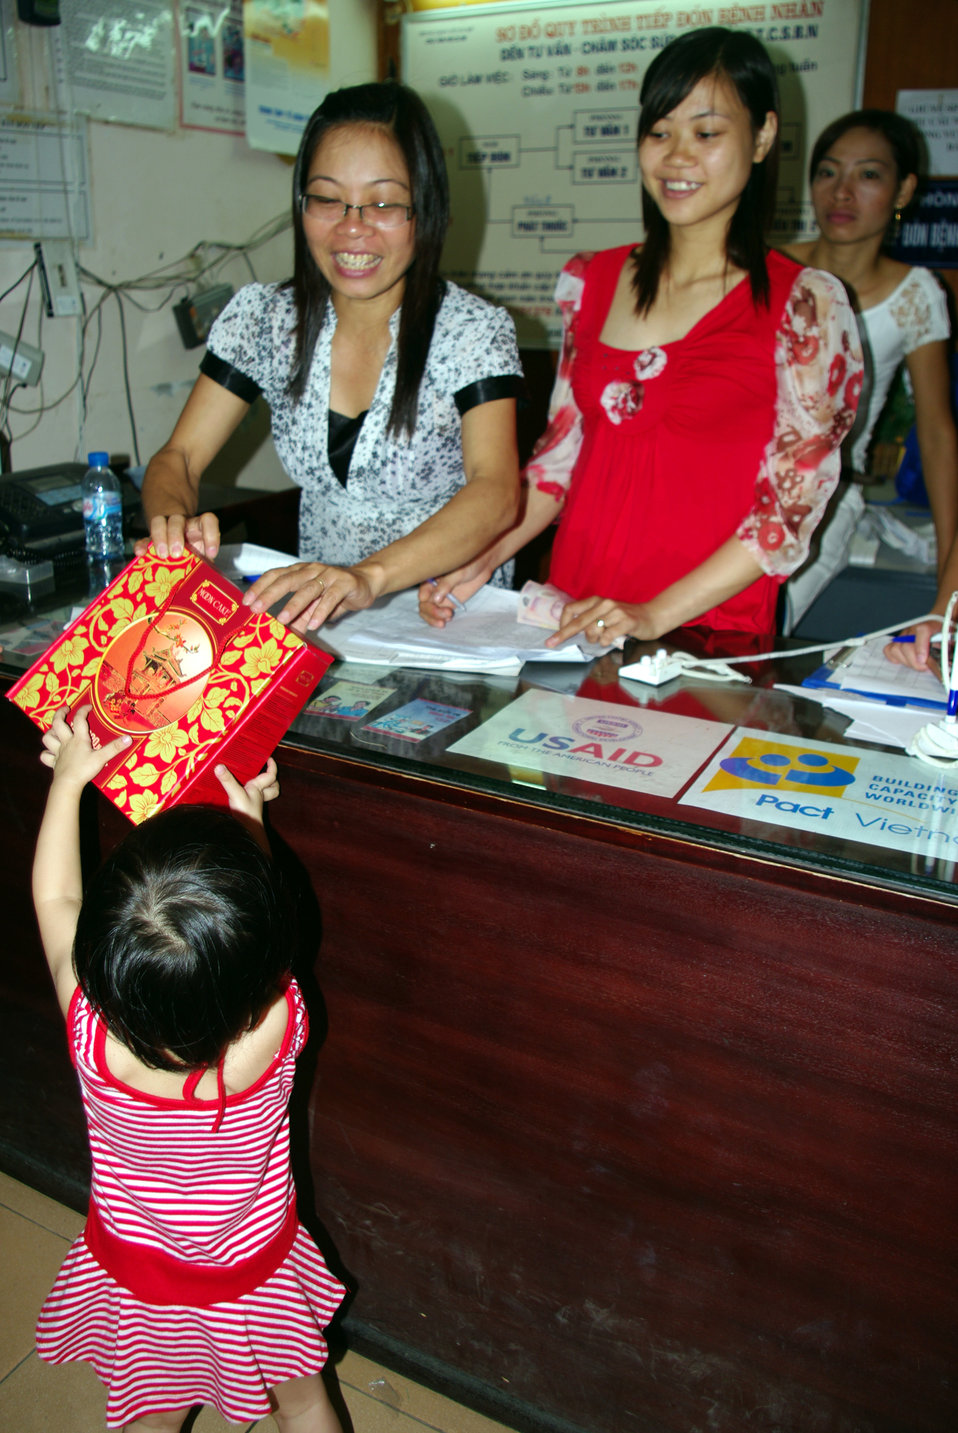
Oprhans and vulnerable children receive free medical check-ups in Hanoi